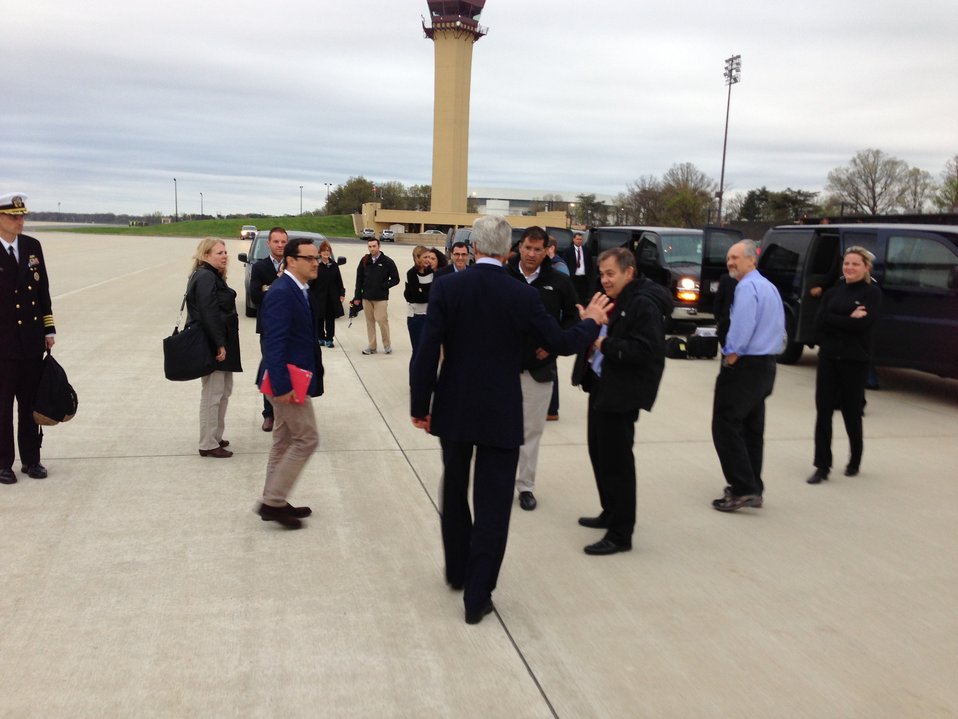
Secretary Kerry Arrives at Andrews Air Force Base

U.S. Secretary of State John Kerry, arriving at Andrews Air Force Base, bids farewell to the press corps who accompanied him on his 10-day trip to Istanbul, Jerusalem, Ramallah, London, Tokyo, Seoul, and Beijing on April 15, 2013.